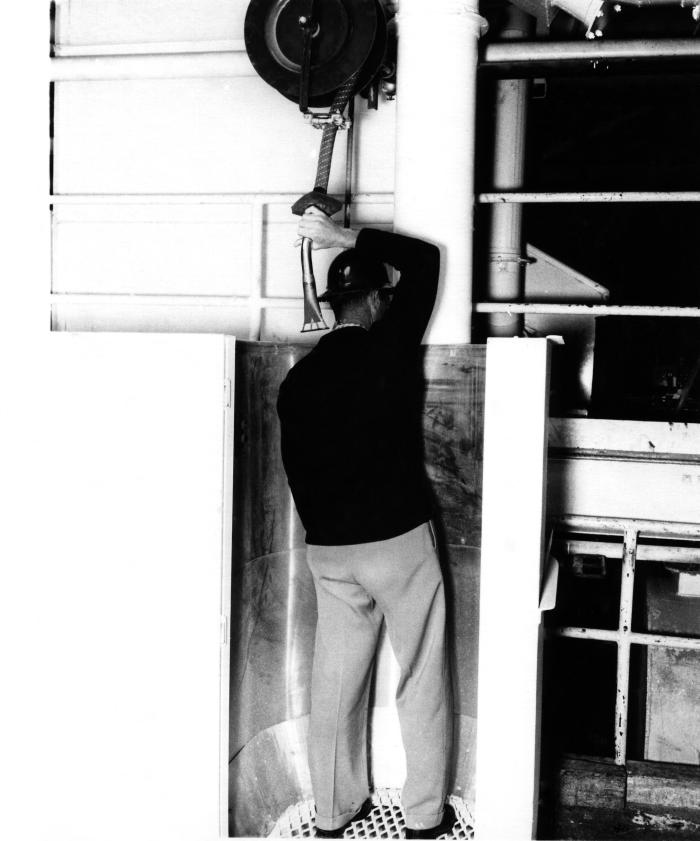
This 1958 historical photograph was provided by the Center for Disease Control's (CDC), National Institute for Occupational Safety and Health (NIOSH), and depicted a worker using the 'blow-off booth' in a Lompoc, California diatomaceous earth processing plant. The dust blown off by the air hose would be picked up by the downdraft exhaust system under the floor grating. This would reduce the amount of dust the worker brought home on his clothes. The image originally appeared in a U.S. Public Health Service Publication No. 601, in an article entitled,'Pneumoconiosis in Diatomite Mining and Processing', 1958. Inhaled dust or other airborne particulate materials containing silica that is deposited in the lungs, will cause the lung tissue to react by creating generalized nodular fibrotic changes, and is known as 'pneumoconiosis', which is also know an pneumosilicosis, or 'grinders' disease'.